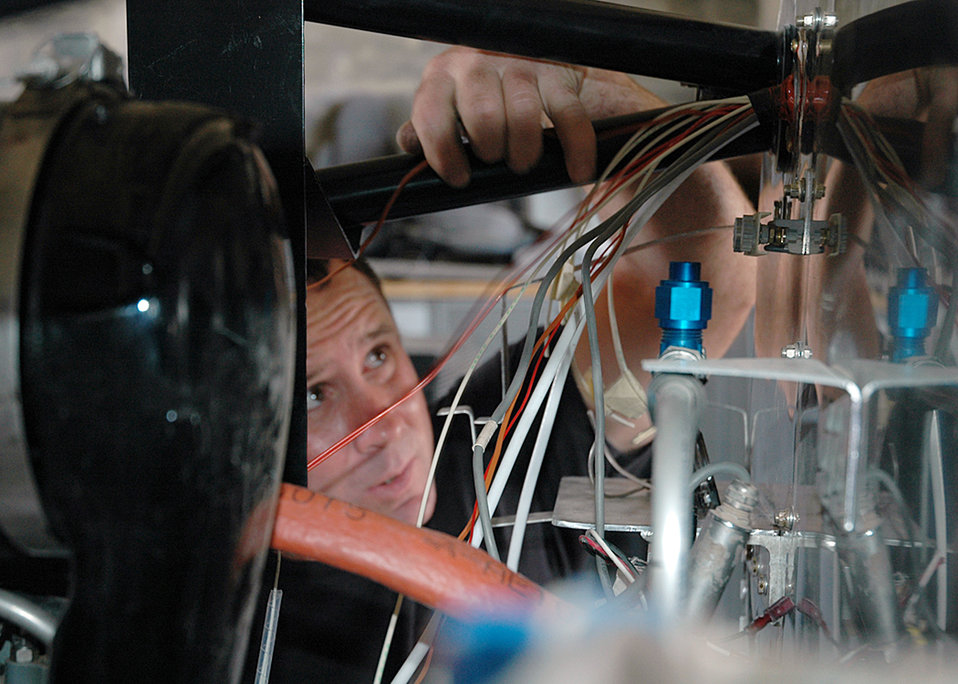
Mission accomplished for Airmen on project team

Tech. Sgt. Bobby Saenz wires the battery and other electrical connections on an Iraqi Air Force Comp Air 7SLX aircraft at Kirkuk Air Base, Iraq. Sergeant Saenz is an electrical and environmental systems craftsman with the aircraft project team.